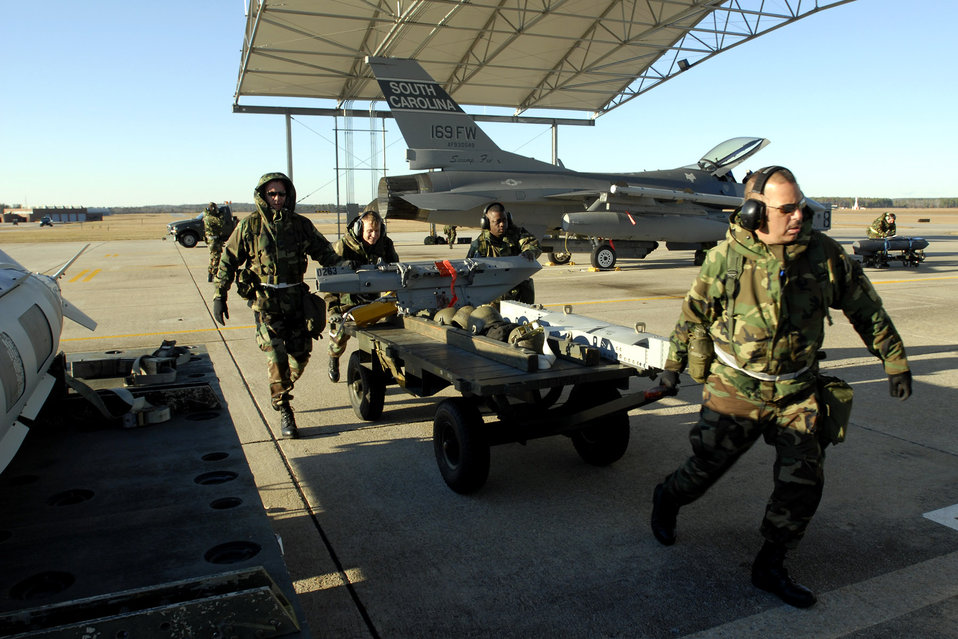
Showing inspectors what they can do

Airmen from the 169th Fighter Wing at McEntire Joint National Guard Base, S.C., are evaluated during an operational readiness inspection. An ORI evaluates a unit's ability to process people, equipment and aircraft from home station to a deployed location safely and efficiently.